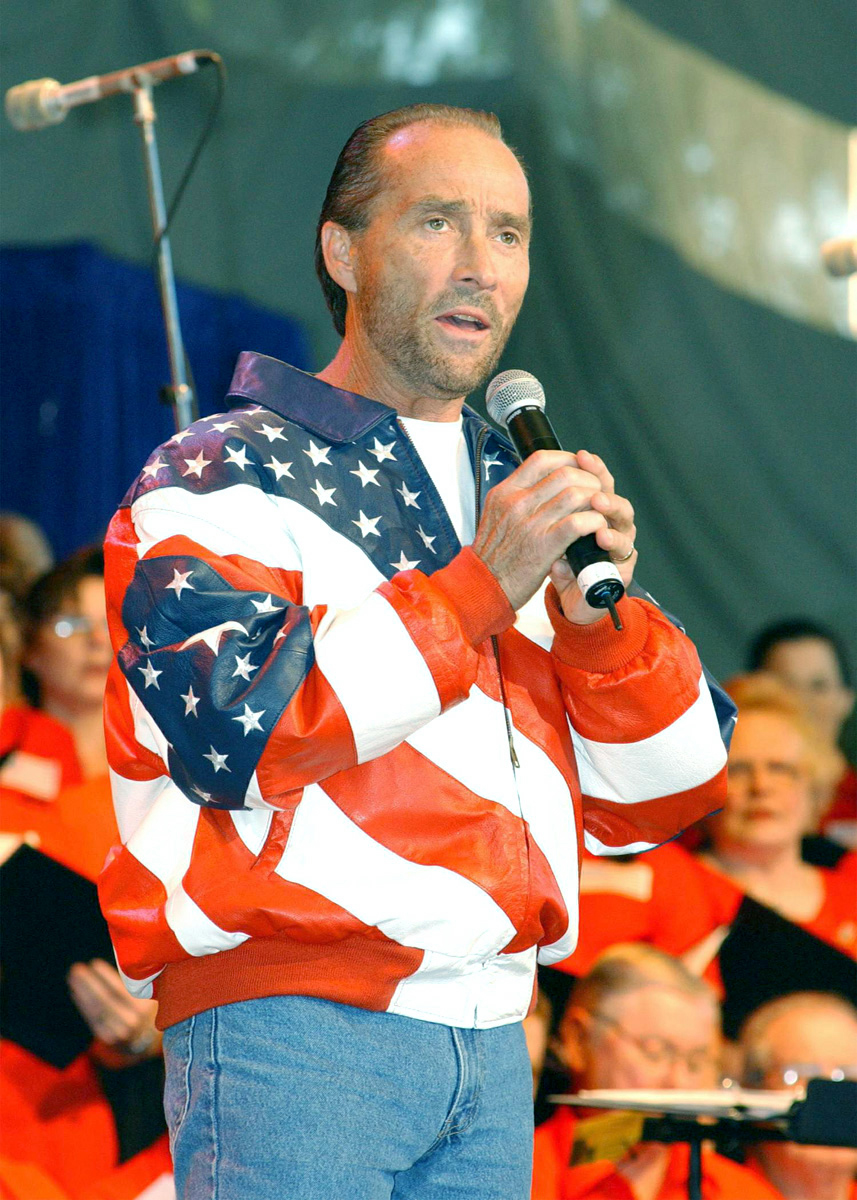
Greenwood

SAN ANTONIO -- Members of the Lackland Air Force Base, Texas, Air Force Band of the West performed at Six Flags Fiesta Texas Sept. 25 in tribute to those affected by terrorist attacks Sept. 11. The band played patriotic music alongside big names in entertainment
including Lee Greenwood and Larry Gatlin. The event, sponsored by the Professional Golfers' Association was televised and broadcast nationally.